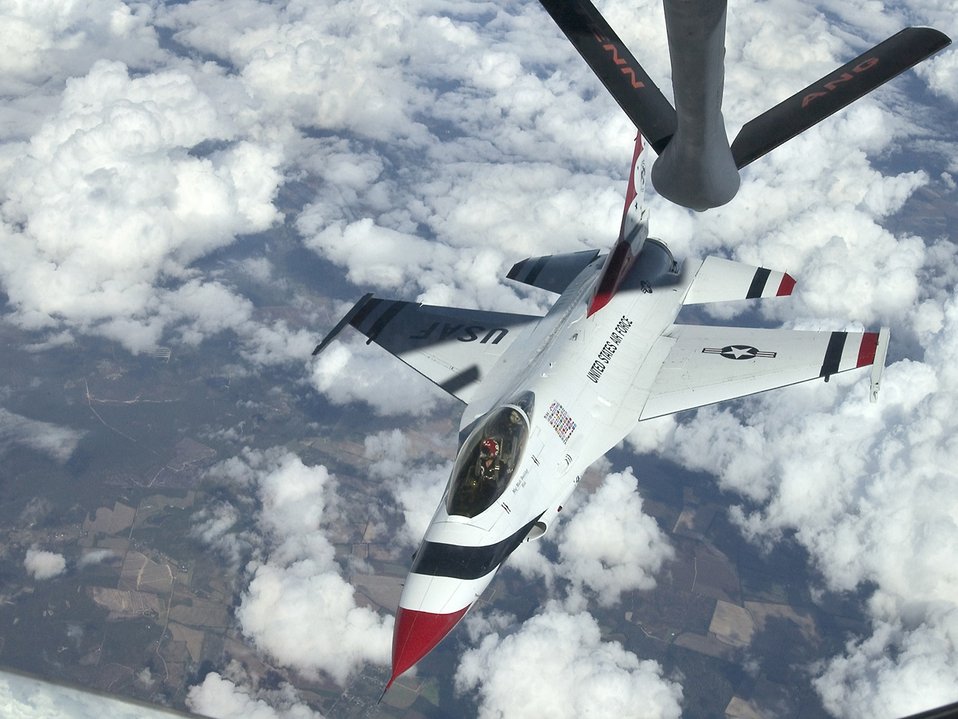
Thunderbird refuel

OVER SOUTH CAROLINA -- A Tennessee Air National Guard KC-135 Stratotanker refuels an Air Force Thunderbird recently.